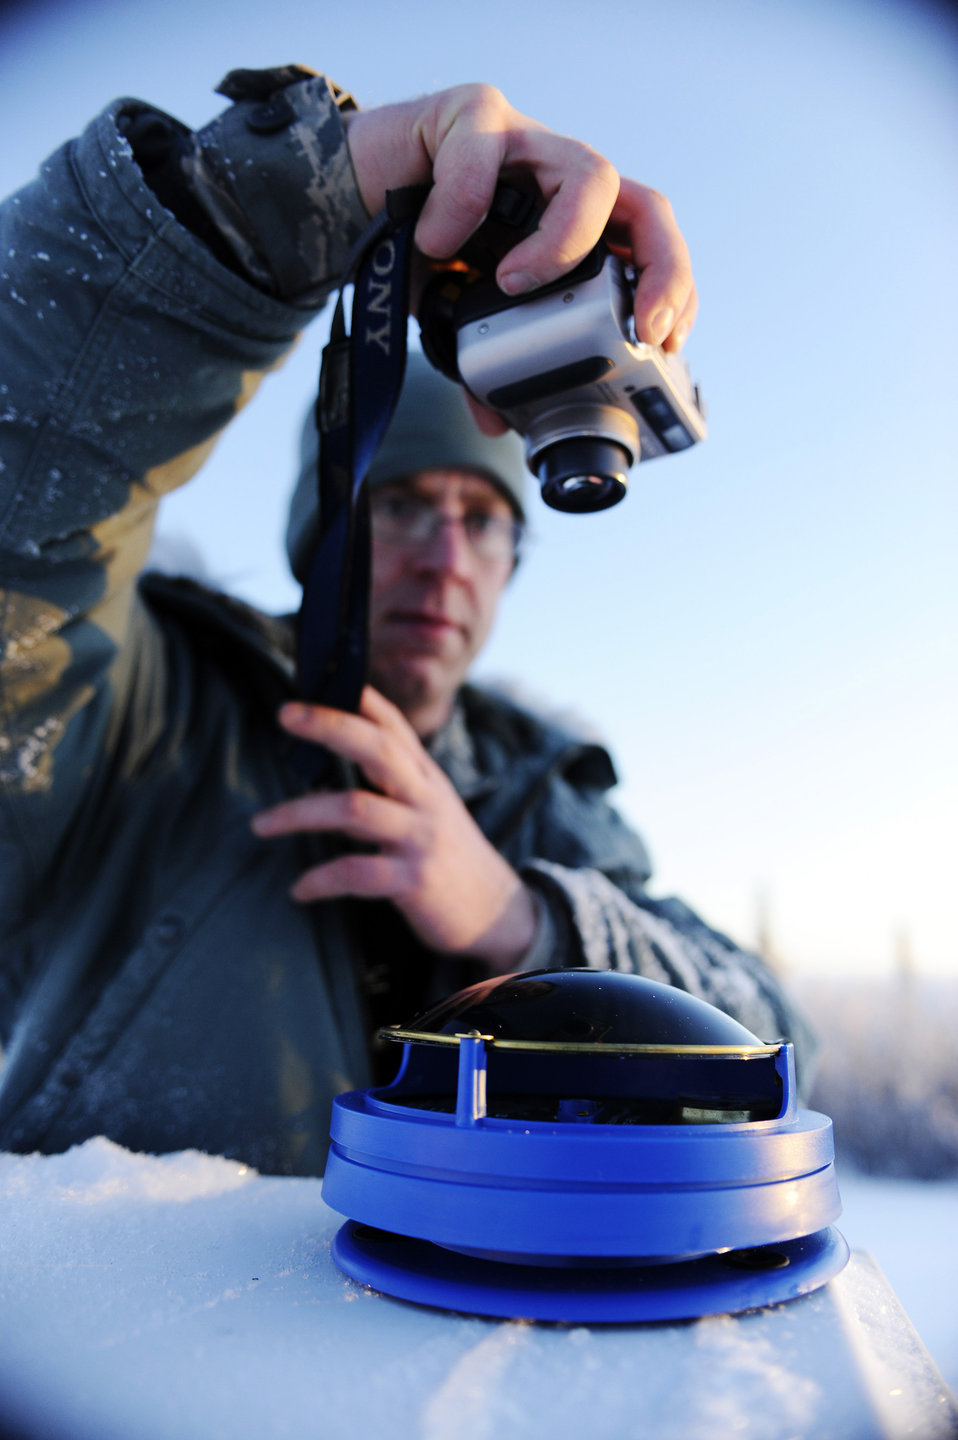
Eielson Airmen research alternative energy resources

Staff Sgt. Stewart Raring captures a digital image of the solar pathfinder readings Dec. 16, 2008, at a remote operating facility in Alaska. A solar pathfinder shows the year-round, site-specific solar data to determine the best location and angle to setup solar panels. Currently Det. 460 officials plan on constructing a solar hybrid power system at seven different locations replacing their current propane power source saving more than $100,000 in maintenance and refueling over a five-year period. He is assigned to Det. 460 at Eielson Air Force Base, Alaska.